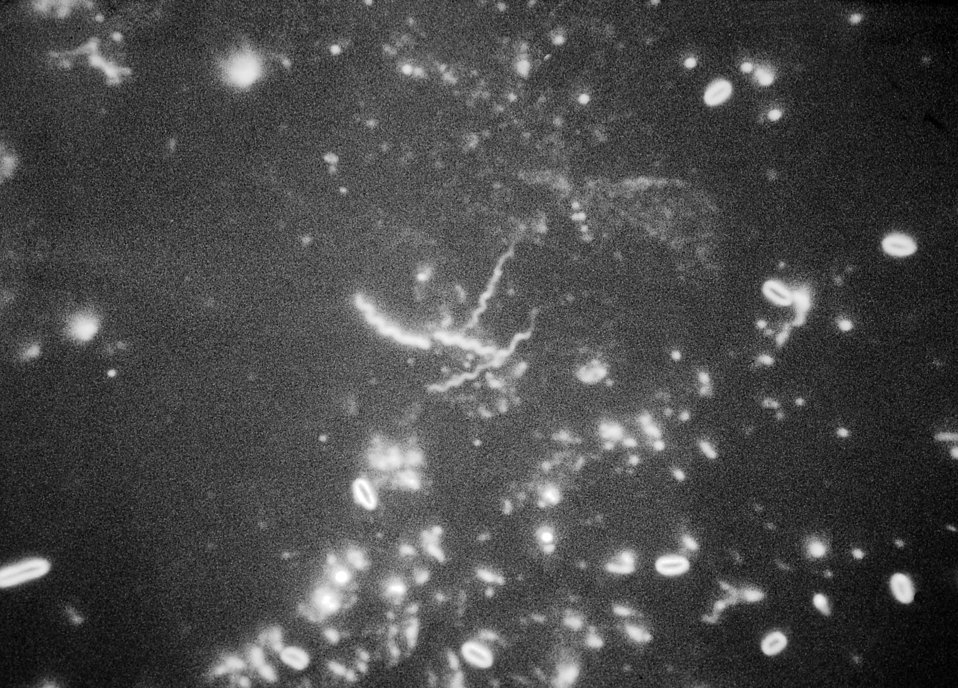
A photomicrograph revealing Treponema carateum bacteria obtained from an early pinta lesion; magnified 540X.